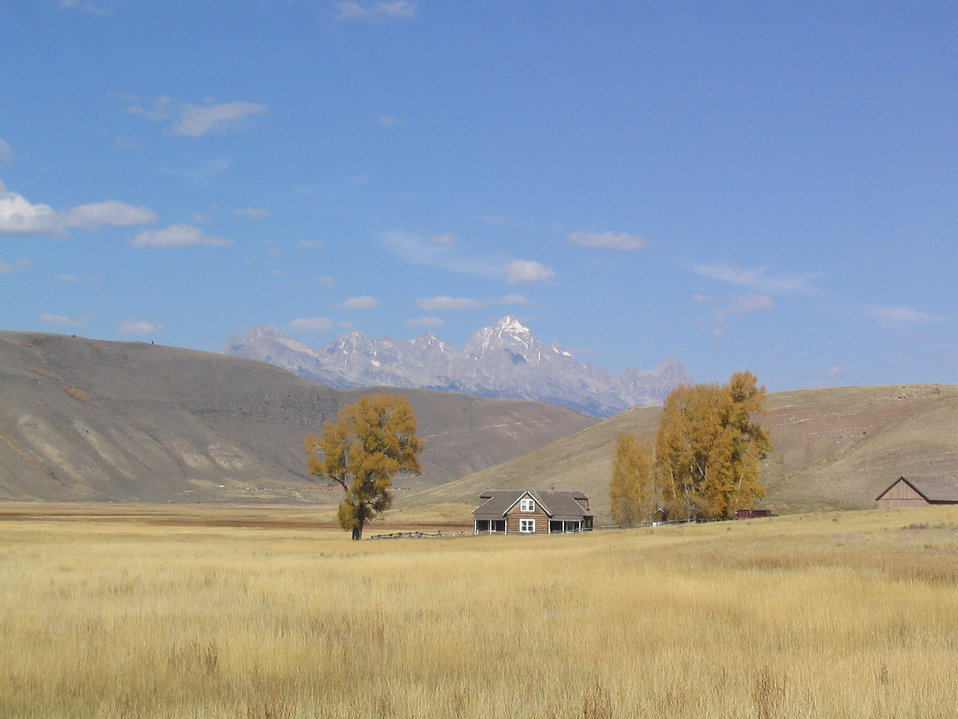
Miller Homestead, National Elk Refuge

The Miller House, located approximately 3/4 mile north of the National Elk Refuge entrance on East Broadway Street in Jackson, Wyoming is open from 10:00 a.m. to 4:00 p.m. during the summer season. Volunteer staff are on duty to talk about the history of the National Elk Refuge and early homesteaders who lived on the land. Entrance to the historic home is free of charge.